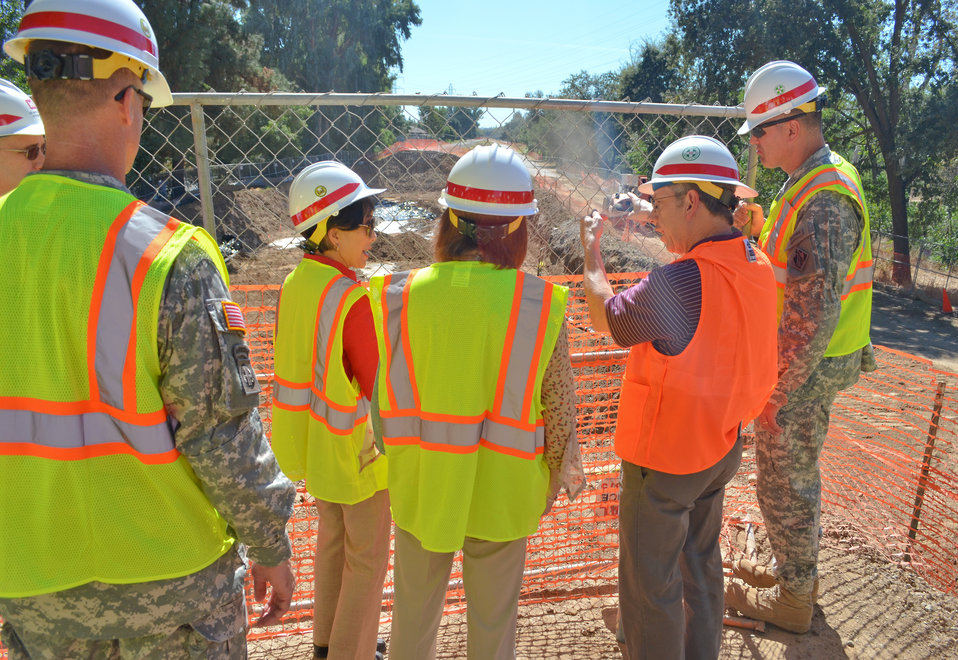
Secretary Darcy, Rep. Matsui visit Sacramento levee project

John Hoge, U.S. Army Corps of Engineers project manager (center right), explains construction progress on an American River levee improvement project to U.S. Rep. Doris Matsui (center left) and Jo-Ellen Darcy, Assistant Secretary of the Army for Civil Works (center), in Sacramento, Calif., Sept. 27, 2011. Under its American River Common Features project, the Corps’ Sacramento District is building a seepage wall into the levee to strengthen it and help prevent water from leaking through or under it.